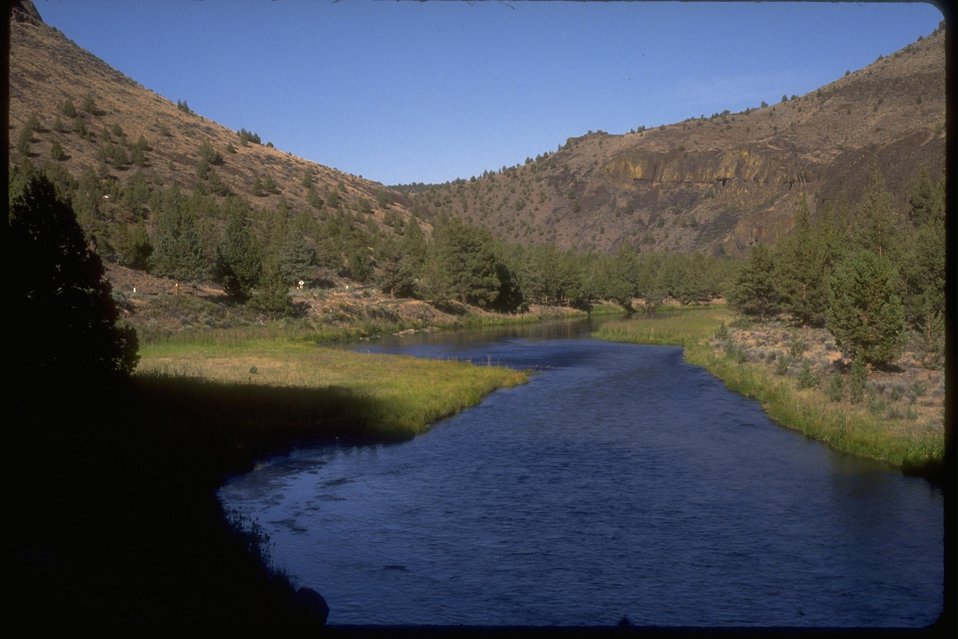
Straight-way of the Crooked River.